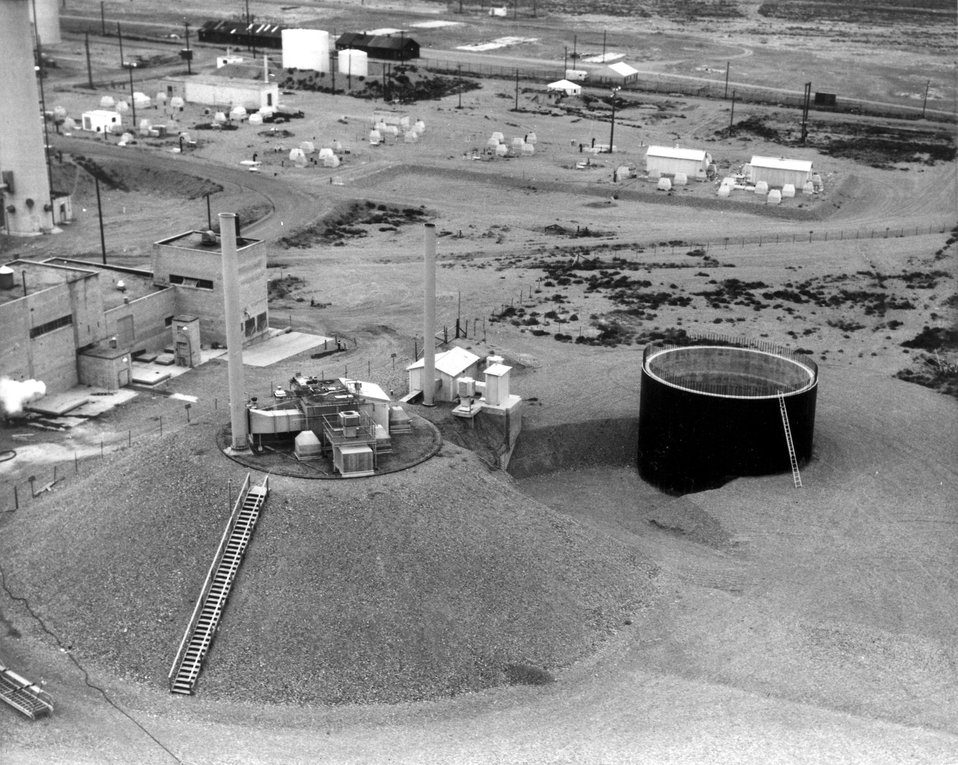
Waste Calcining Facility... A concrete vault for the Wast Calcining Facility storage bins was under construction in 1970 at the Atomic Energy Commission's National Reactor Testing Station in Idaho.